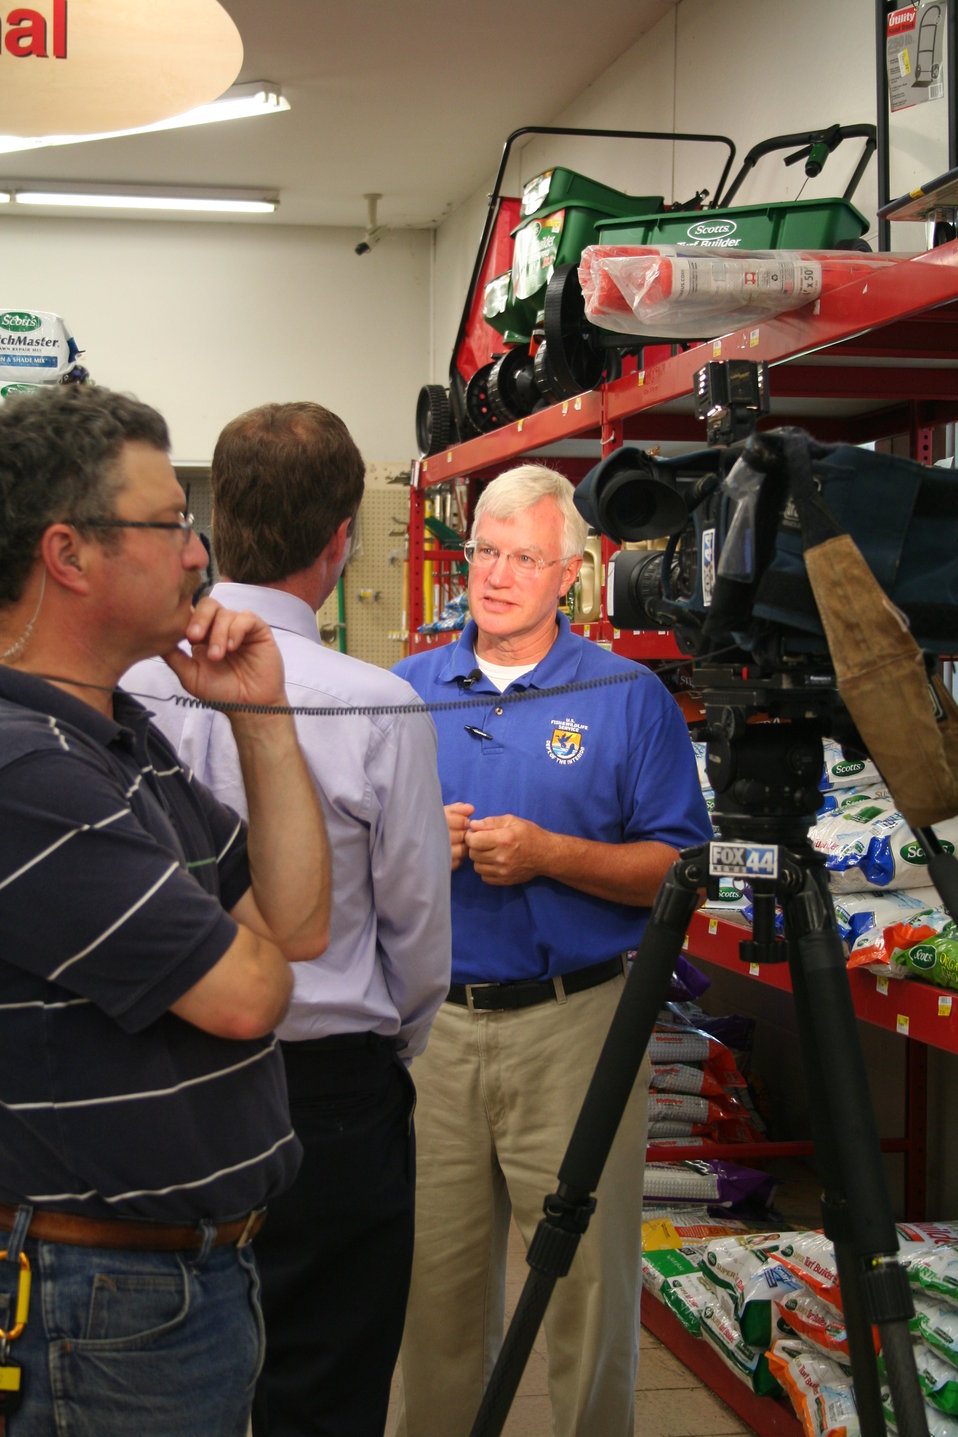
USFWS Dave Tilton discusses sea lamprey control with media.